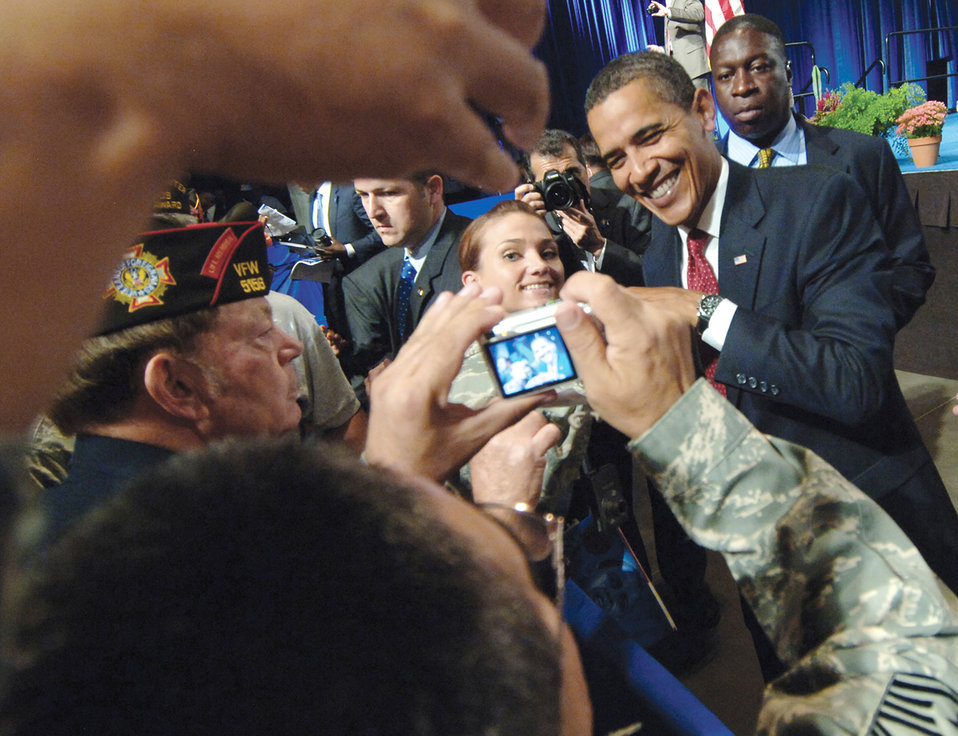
President meets Luke Airmen

Capt. Kristen Gibson has her photo taken while giving President Barack Obama a